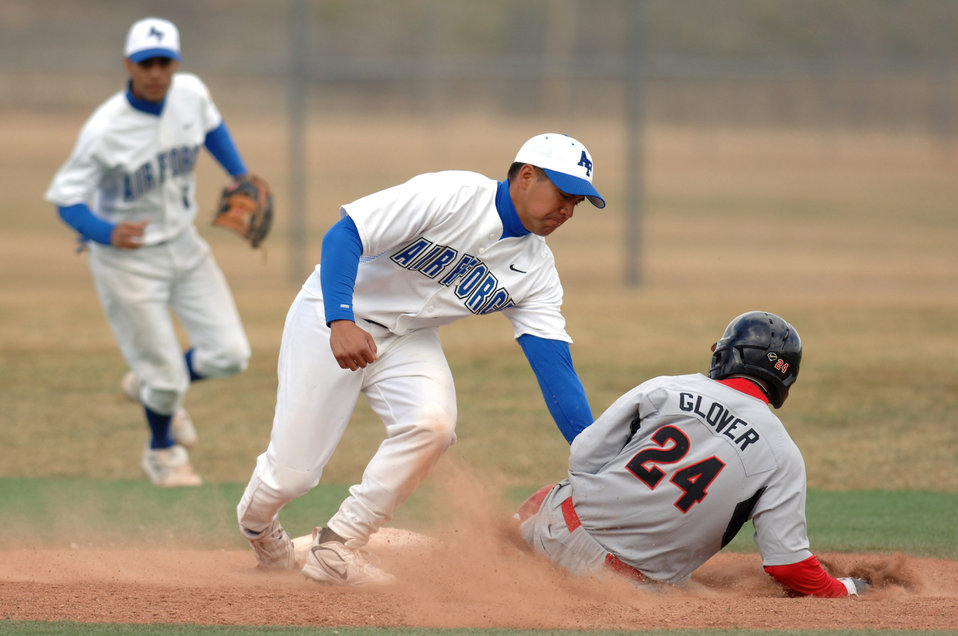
San Diego defeats Falcons

Senior 2d baseman Geno Salazar applies the tag at 2nd base during the 12-9 loss to San Diego State March 22. Cadet Salazar went 3-for-4 with a walk, double and RBI. The Falcons hosted the Aztecs for a 3-game series.